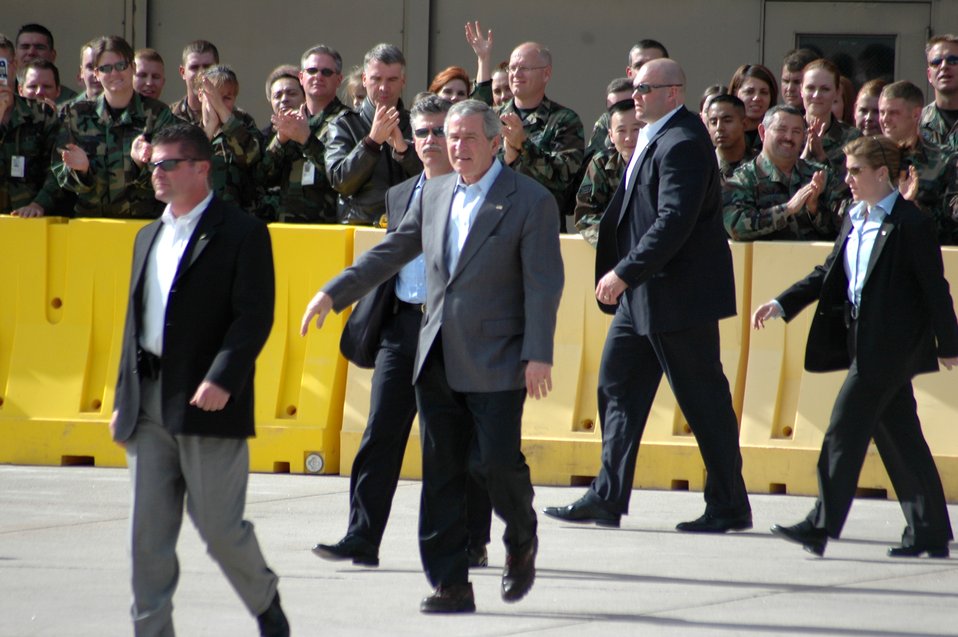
President Bush visits Buckley Air Force Base

President George W. Bush walks back from meeting and shaking hands with about 50 Colorado Air National Guard members outside of Hangar 909 before he flew out of Buckley Air Force Base, Colo., Nov. 4. The president was in Denver for a political rally.